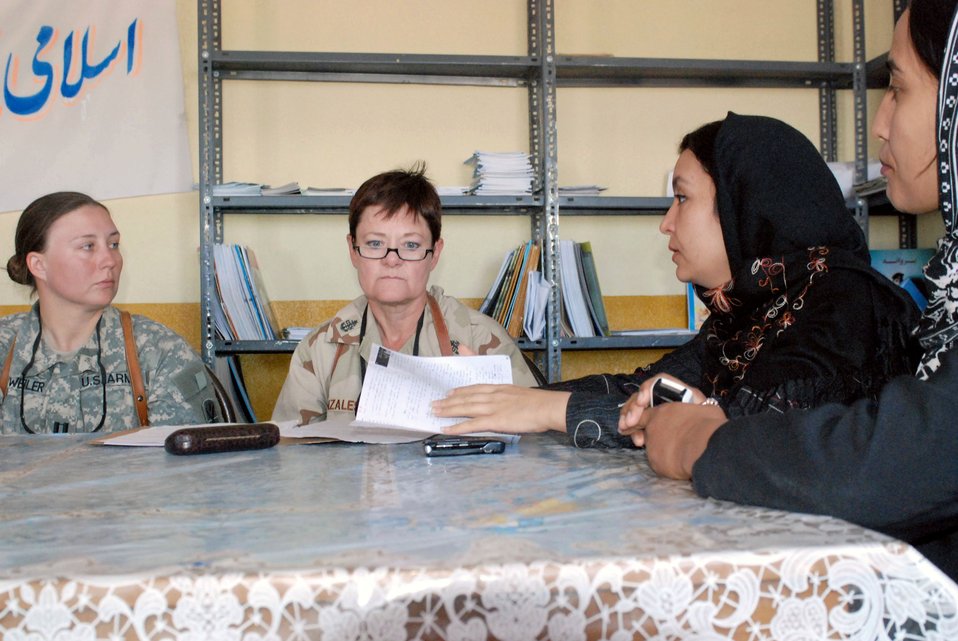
Servicemembers reach out to Afghanistan women

Army Capt. Megan Detweiler (left) and Navy Senior Chief Petty Officer Darlene Gonzales listen to Sima Shir Mohammadi (right center) as she shares issues of concern Afghan women are facing Sept. 29 in Herat, Afghanistan. Captain Detweiler is an information operations officer for Task Force Phoenix in Kabul, and Senior Chief Gonzales is contracting team leader for the Afghan Regional Security Integration Command-West at Camp Stone in Herat. Shir Mohammadi is the head of the Department of Women Affairs in Herat. Also pictured is Simin Alime. The women met to discuss ways coalition and the Afghan national security forces could be of assistance to the school and to Afghan women in general.